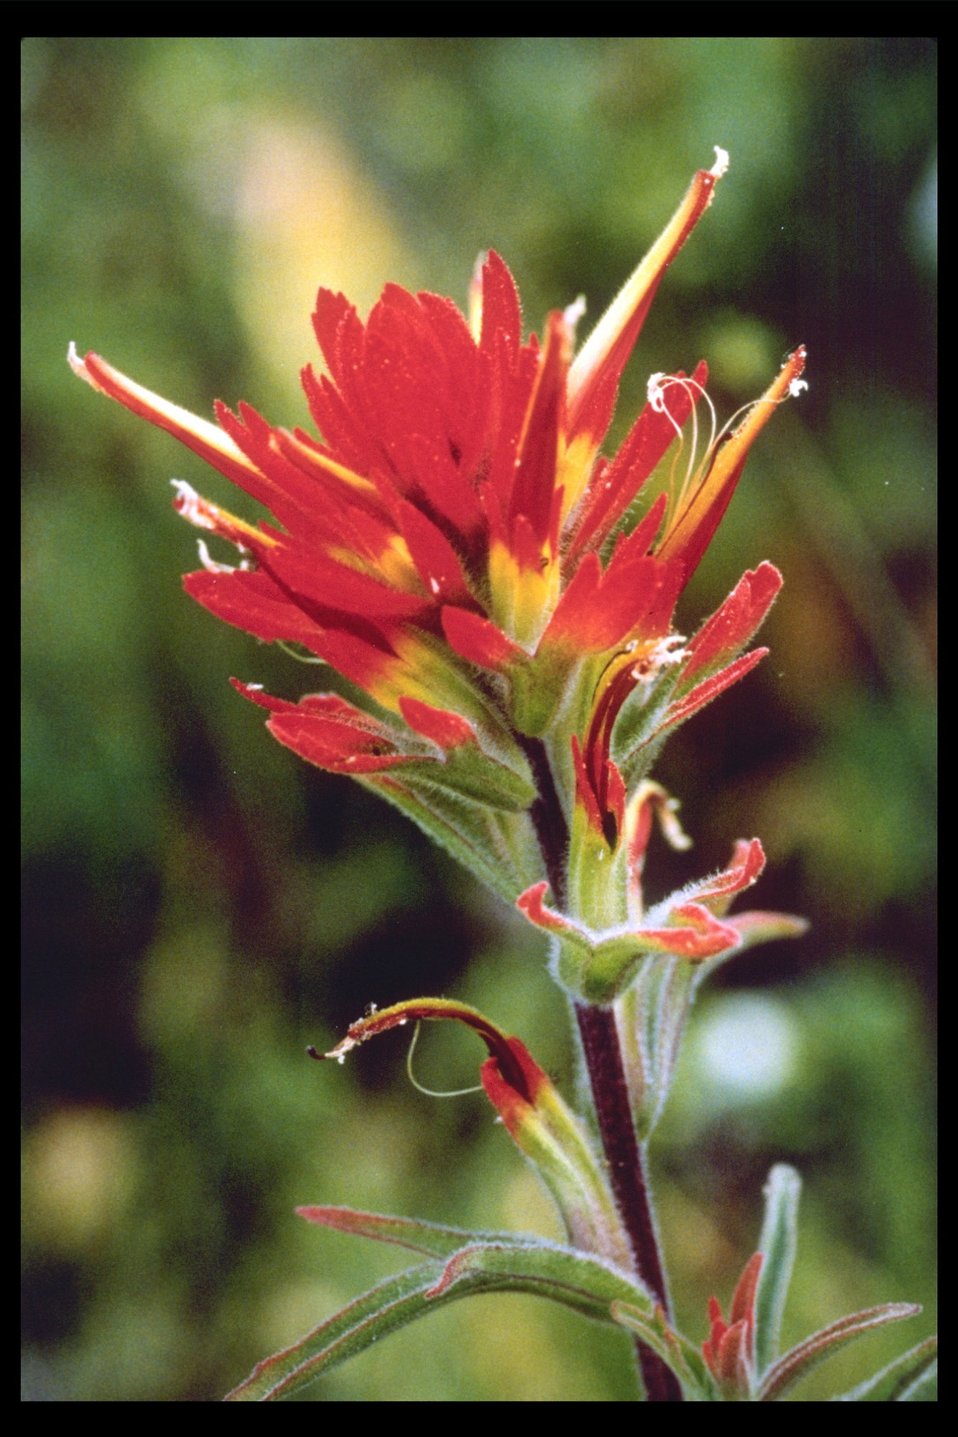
Indian Paintbrush (Castillija sp.) at Upper Table Rock Trail.